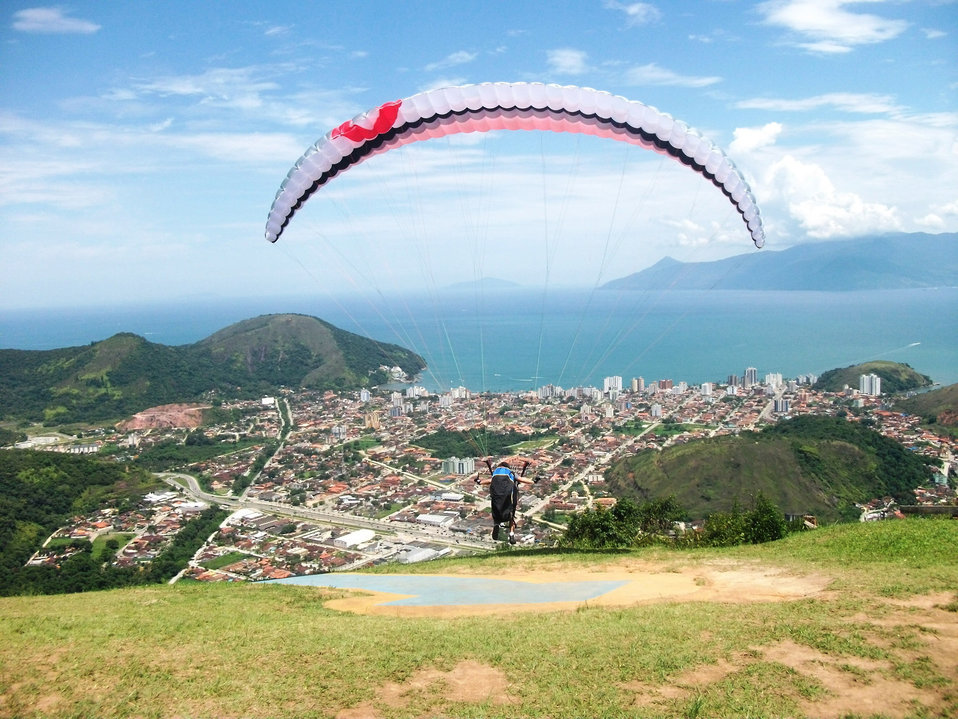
Paragliding a takeoff.